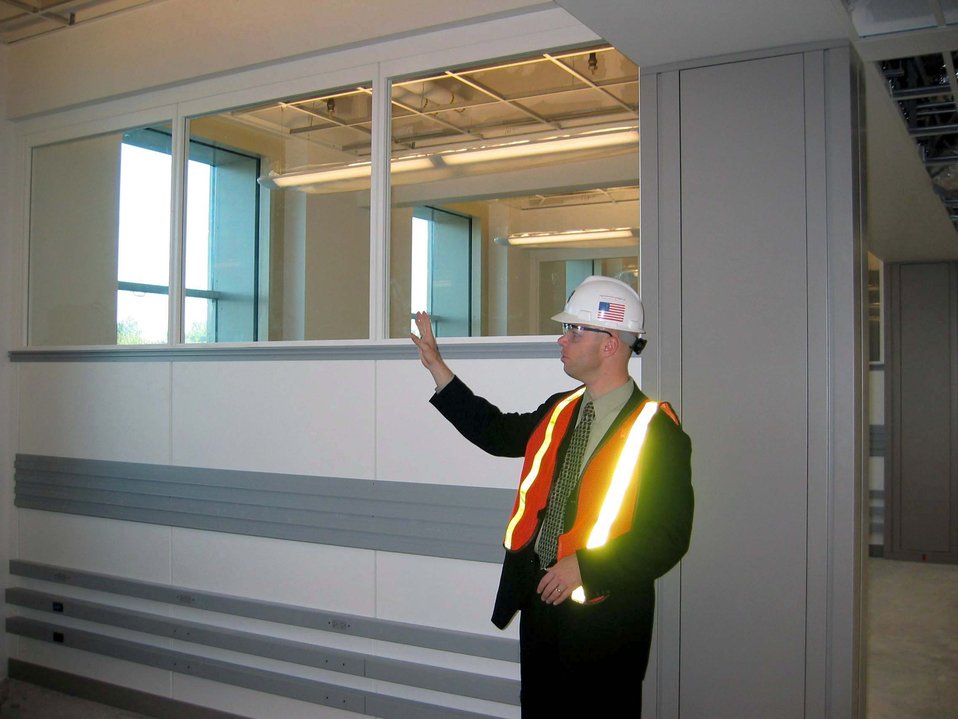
Eaton

WASHINGTON -- Brett Eaton explains how